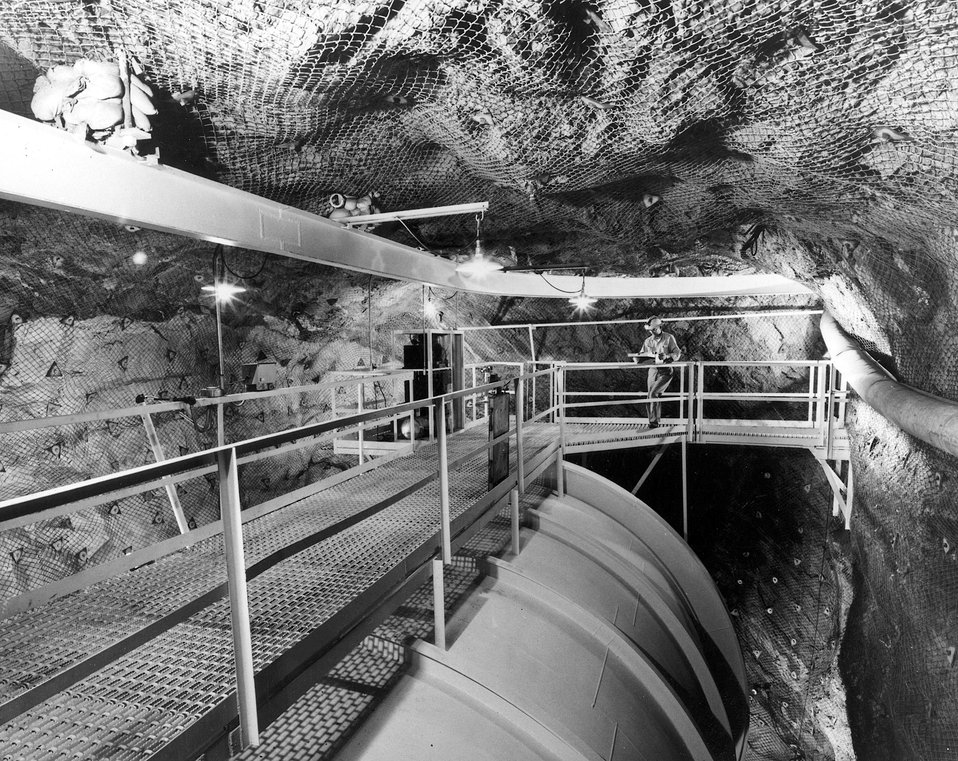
A long-term experiment conducted by the Atomic Energy Commission's Brookhaven National Laboratory in a mile-deep South Dakota mine, has produced its first solar neutrino detection by chemical reactions. c. 1972